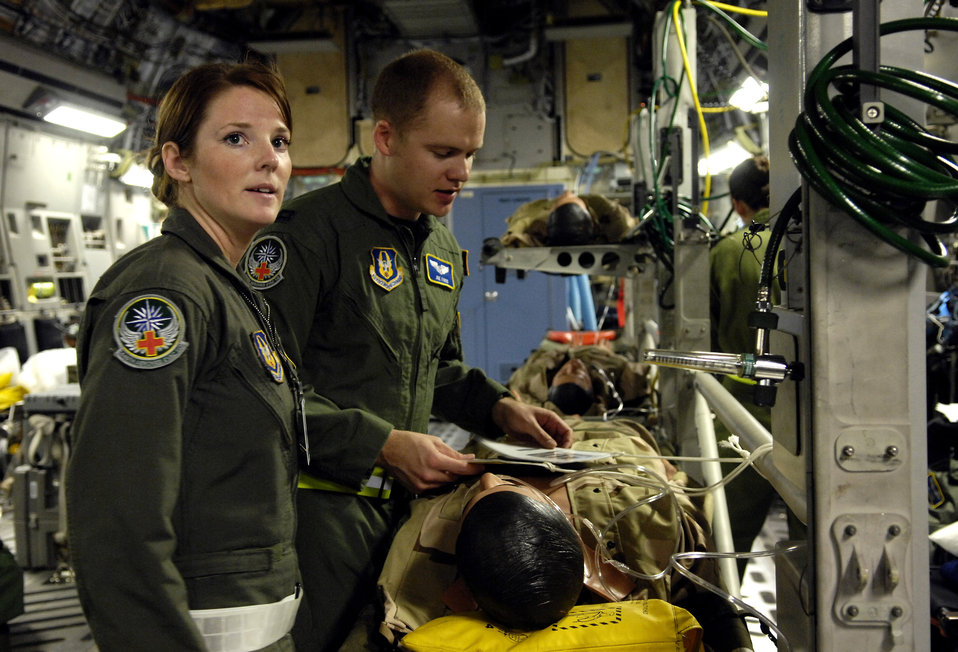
Providing a lifeline

Senior Airman Suzanne Redd and Capt. Joe Foss tend to a